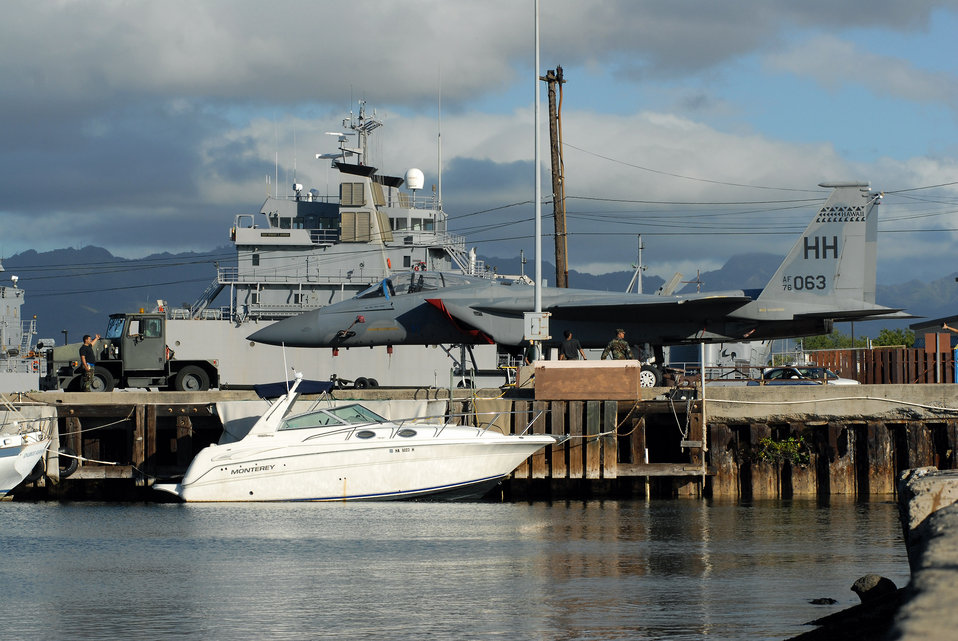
Flying low

An F-15 Eagle sits on the cargo pier Aug. 26 at Hickam Air Force Base, Hawaii. The aircraft was from the 199th Fighter Squadron of the Hawaii Air National Guard.